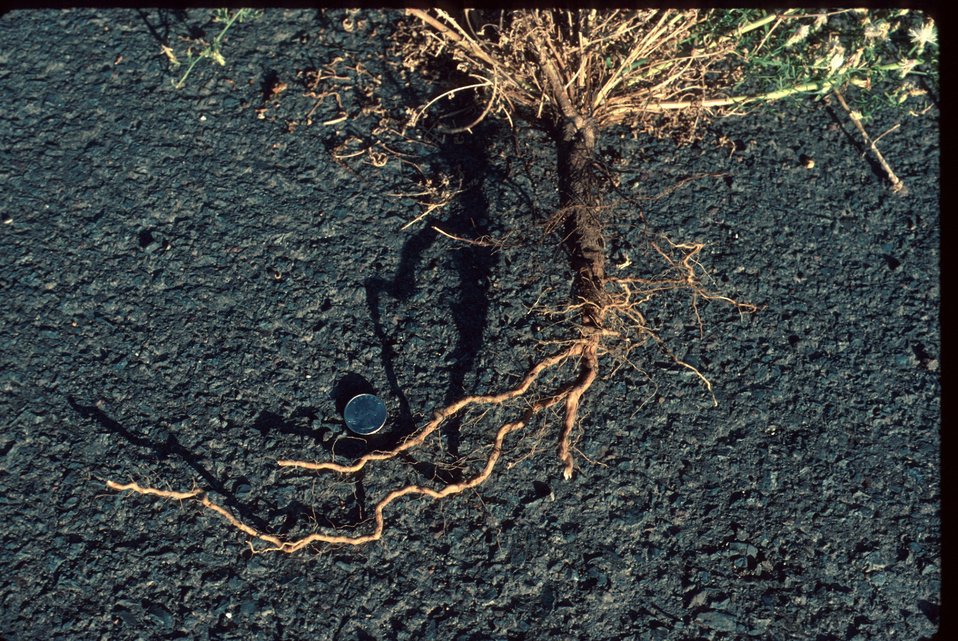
Root of diffuse Knapweed noxious weed